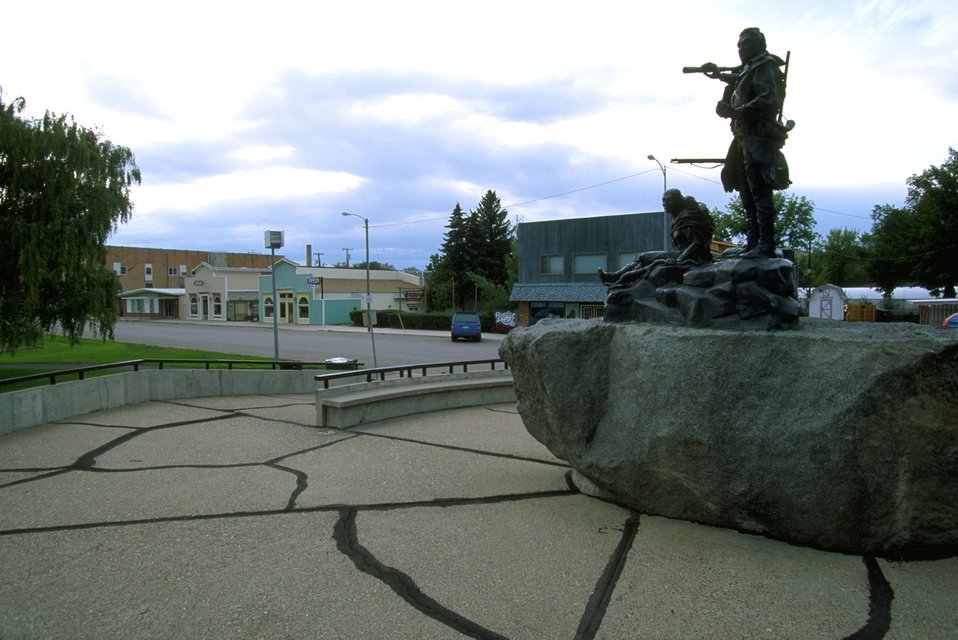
Lewis and Clark statue